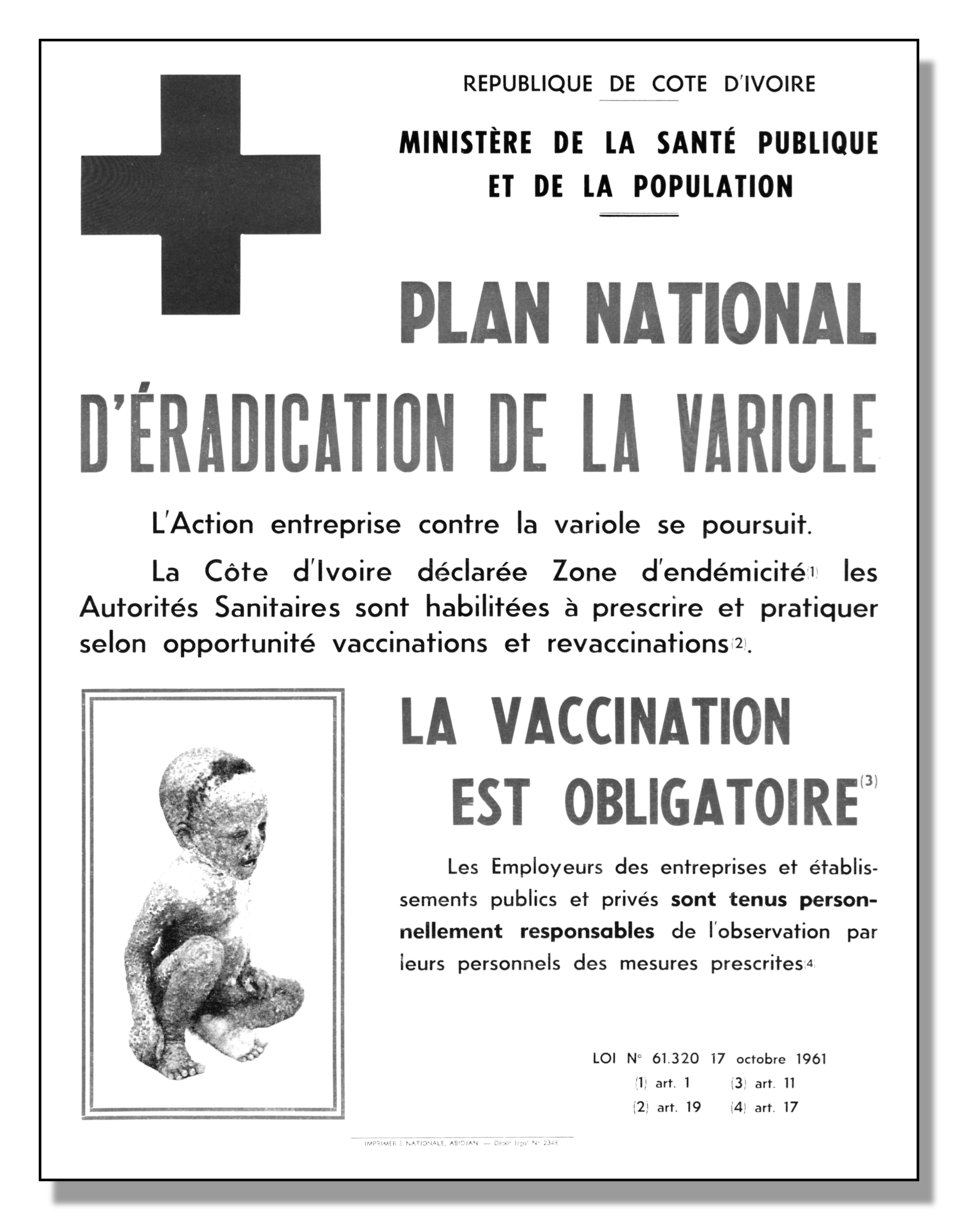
This foreign poster created prior to 1979, promoted the importance of Smallpox and Measles vaccination in the Cote d'Ivoire.